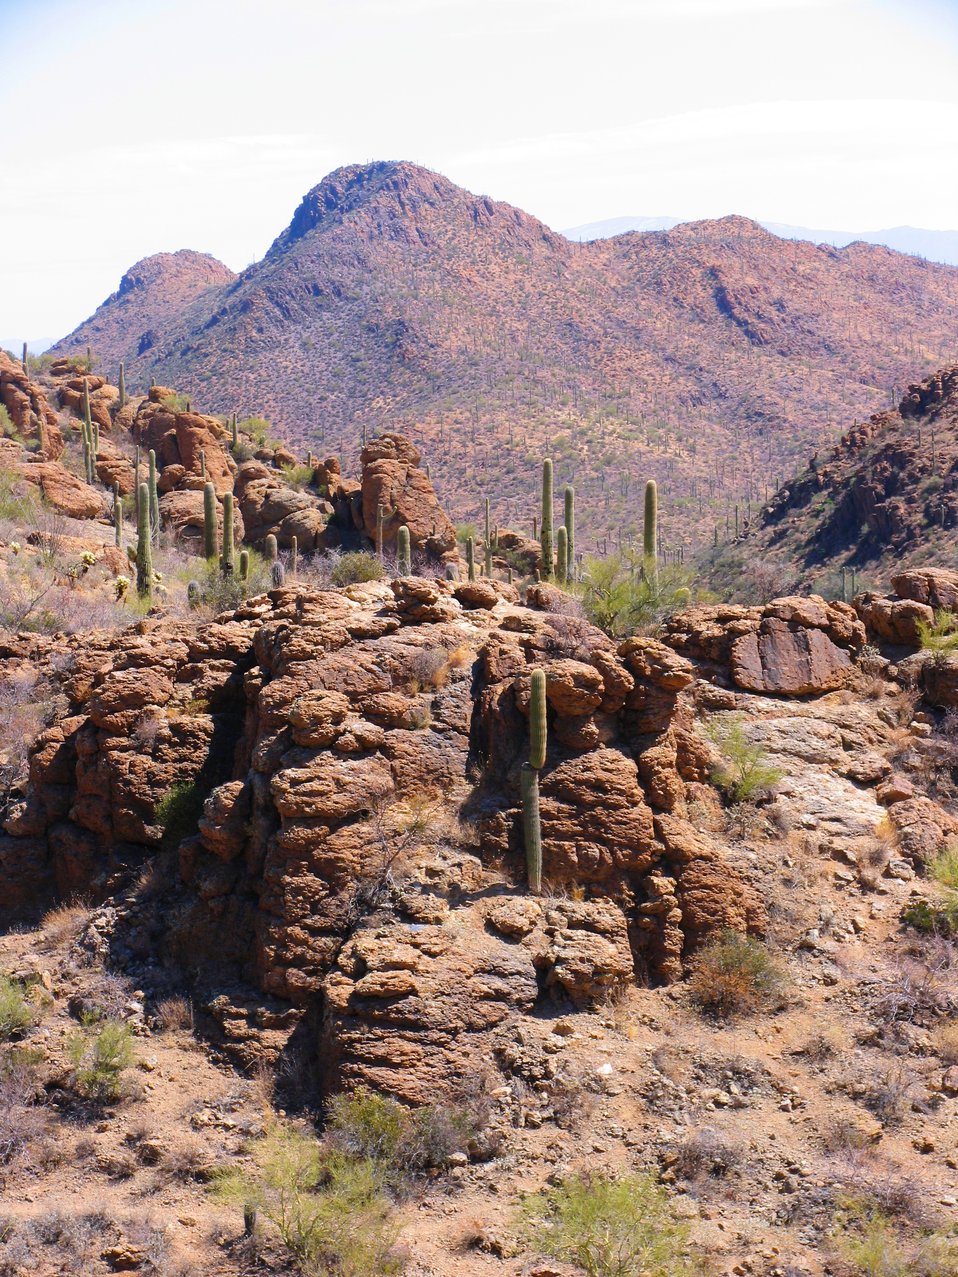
Saguaro cactus in the Gates Pass area of Arizona